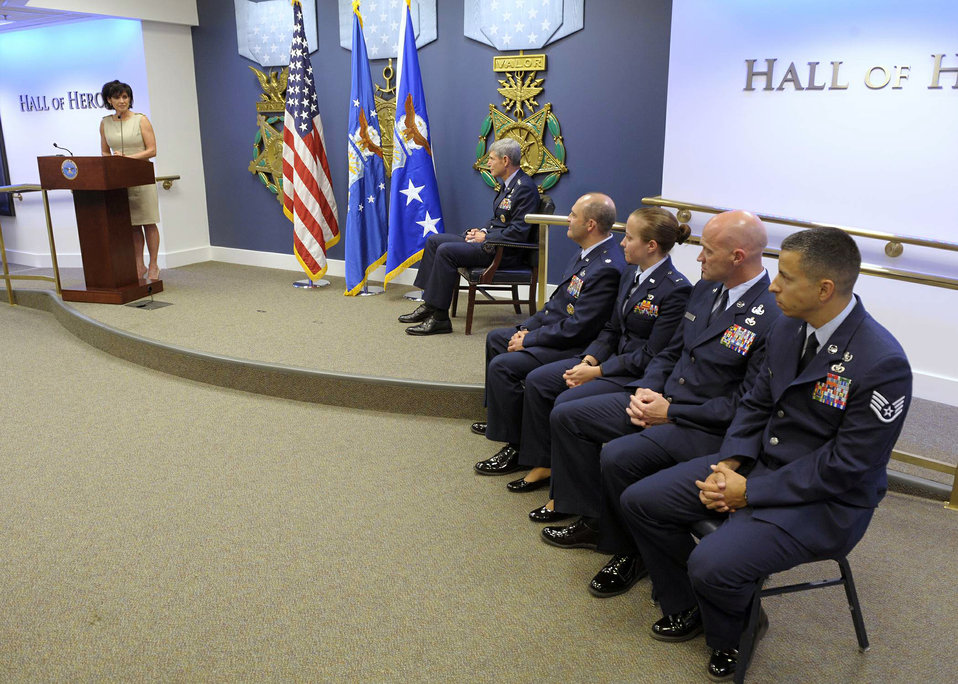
Air Force honors 2010 Sijan award winners

Janine Sijan Rozina provides her remarks during a ceremony May 11, 2011, in the Pentagon's Hall of Heroes to present each of four recipients with a 2010 Lance P. Sijan USAF Leadership Award. This year's recipients are (seated from left) Lt. Col. Tony Millican, 1st Lt. Kathryn Miles, Senior Master Sgt. Brett Rogers and Staff Sgt. Michael Pereira. Ms. Rozina is the younger sister of the award's namesake. The Sijan Award was created in 1981 to recognize individuals who demonstrate the highest qualities of leadership both in and out of uniform. Air Force Chief of Staff Gen. Norton Schwartz (seated center) hosted the event.